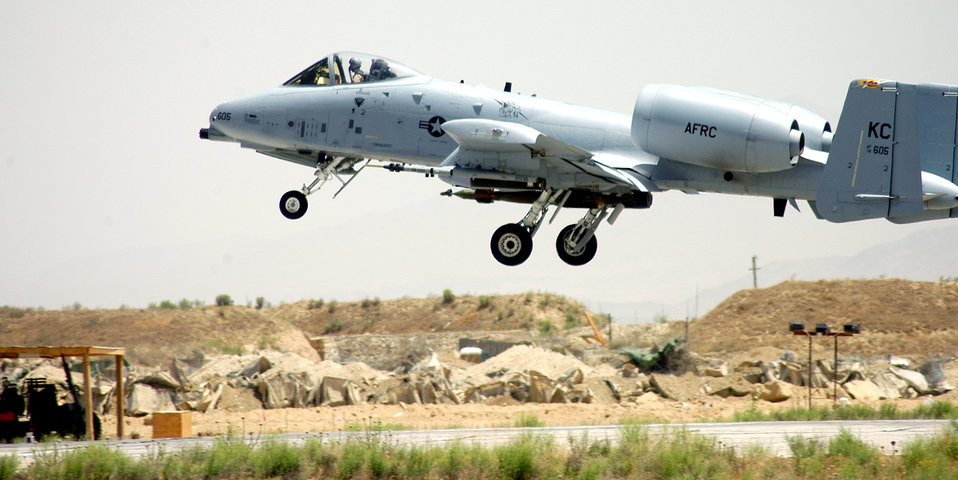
Reconstituting the A-10

An A-10 Thunderbolt II takes off from Bagram Air Base, Afghanistan, on a combat mission on May 23, 2006. The A-10 was deployed from the Air Force Reserve Command's 442nd Fighter Wing at Whiteman Air Force Base, Mo., in support of Operation Enduring Freedom.